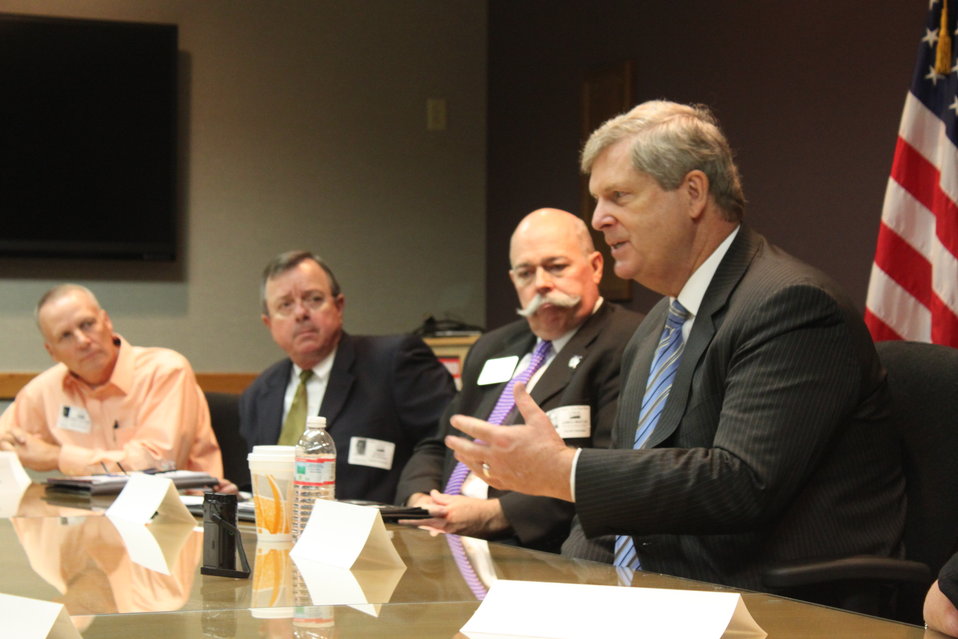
Agriculture Secretary Tom Vilsack receives input from a group of Missouri farmers, agribusiness and academic leaders on the Farm Bill and the importance of its quick passage at a roundtable discussion in Kansas City, MO on Wednesday, Oct. 23, 2013. Pictured left to right: Danny Barker, farmer from Lone Jack, Mo.; Bob Petersen, the Agricultural Business Council of Kansas City; Dr. Ernie Minton, Kansas State University Research and Extension and Agriculture Secretary Tom Vilsack.